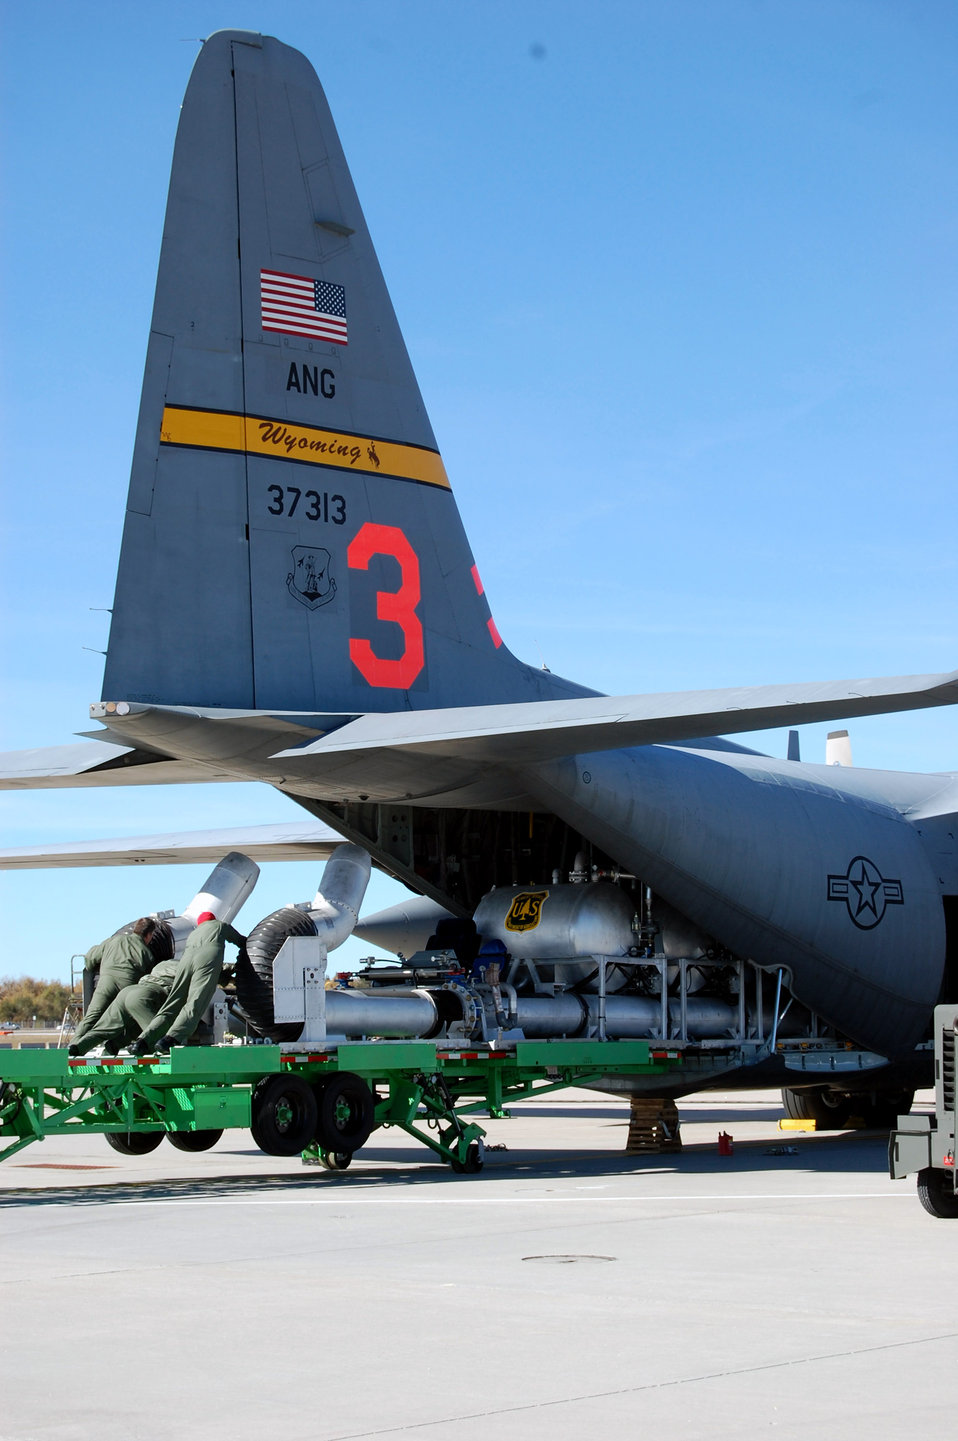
Herculean support for California fires

Airmen from the Wyoming Air National Guard load the Modular Airborne Fire Fighting System onto a Wyoming Air National Guard C-130 Hercules Oct. 23 in Cheyenne, Wyo. The C-130 is being deployed to California to assist with firefighting efforts. Fires have ravaged Southern California forcing more than 500,000 people from their homes as the president has declared a federal emergency for seven counties in the state. The orange number on the tail identifies the plane as one of the units using the Modular Airborne Fire Fighting System to battle the blaze.